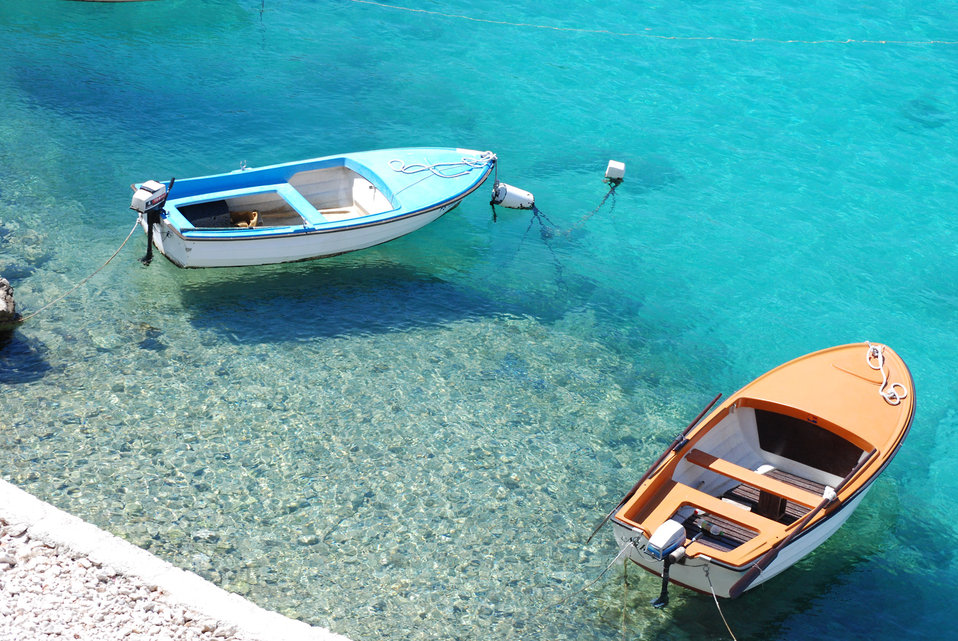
Floating boats

Small boats at adriatic sea.